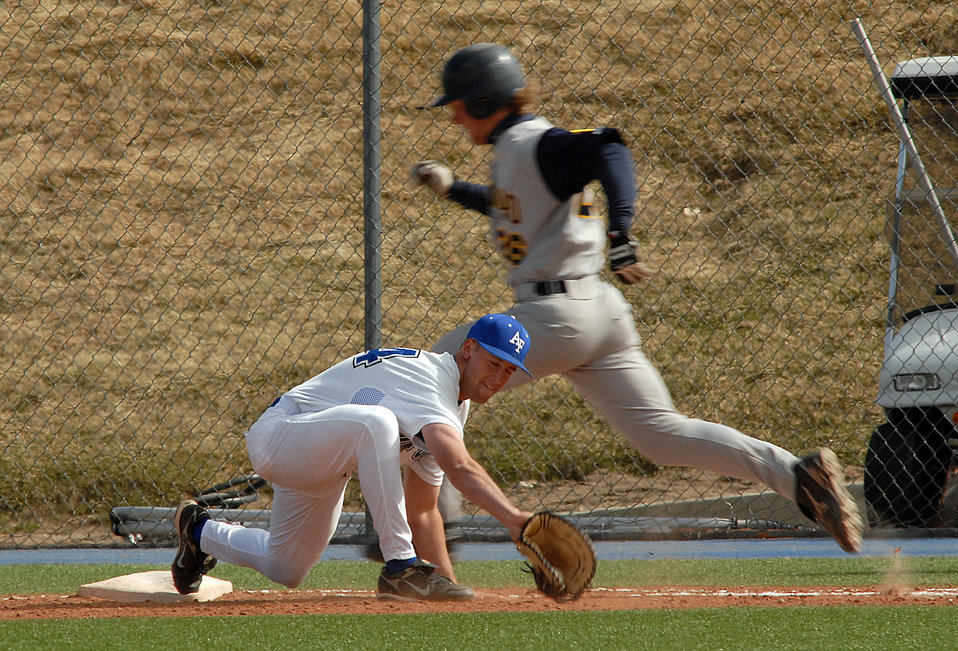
Air Force Rallies To 10th Inning Win Over Colorado Christian

Sophomore first baseman Addison Gentry stretchs to make the put out at first as the Falcons rallied to a 10th inning 9-8 win against Colorado Christian in non conference baseball action at the Academy's Falcon Field. Air Force tallied 12 hits and did not commit an error in the field on the day. The Falcons improve to 11-19 on the season.